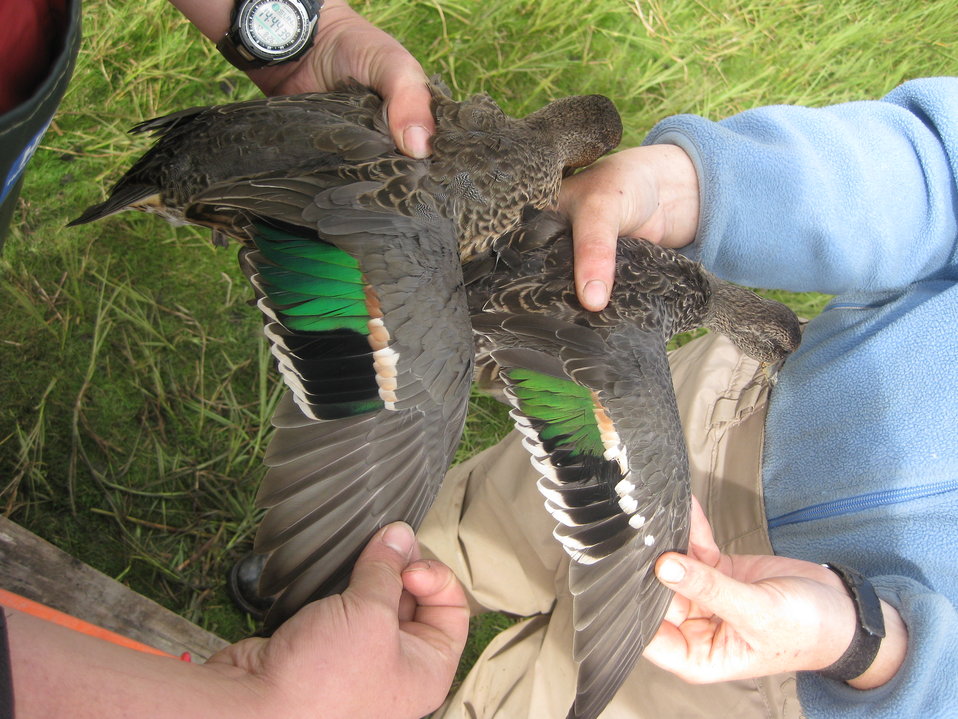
American Green-winged Teal pair

Adult male and adult female American green-winged teal. One of the ways to tell them apart is by wing coloring.

USFWS Yukon Delta NWR